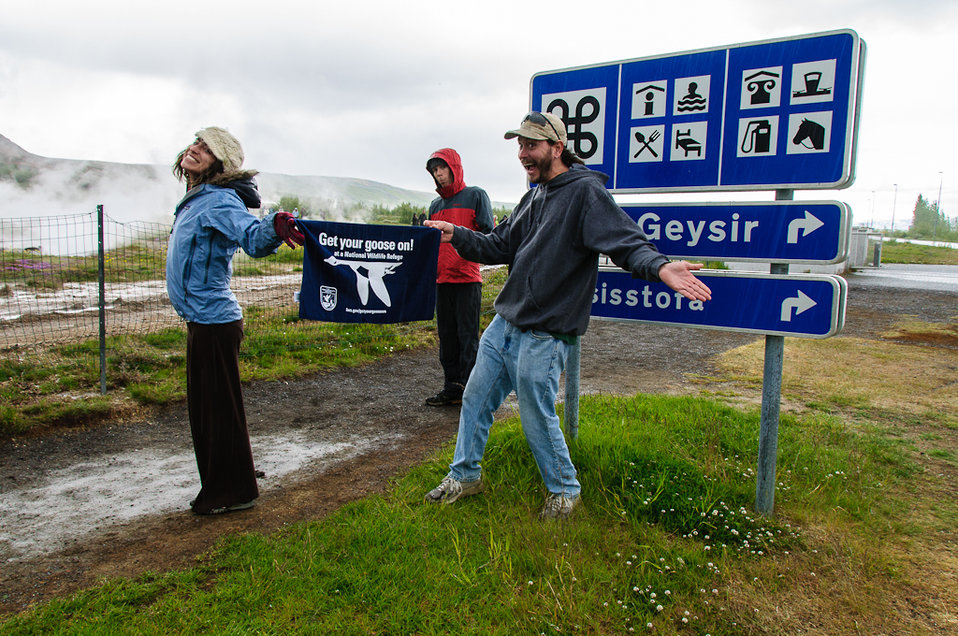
GYGO! in Iceland!